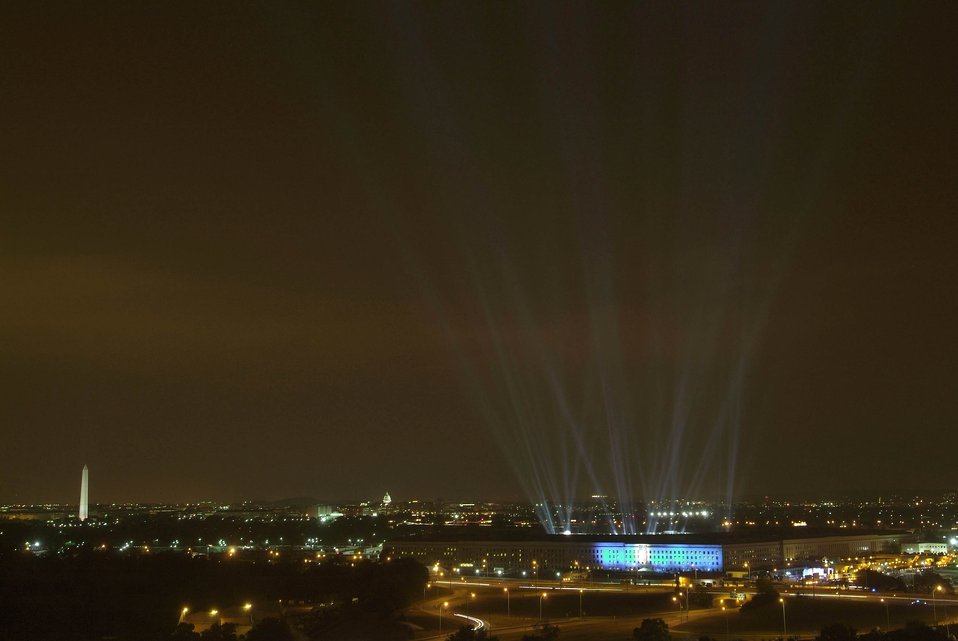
Beams of light honor those who died at Pentagon

During the fifth anniversary of the terrorist attacks, 184 beams of light rise from the courtyard of the Pentagon Sept. 10. The lights are to remember the 184 lives lost when American Airlines Flight 77 crashed into the Pentagon Sept. 11, 2001.